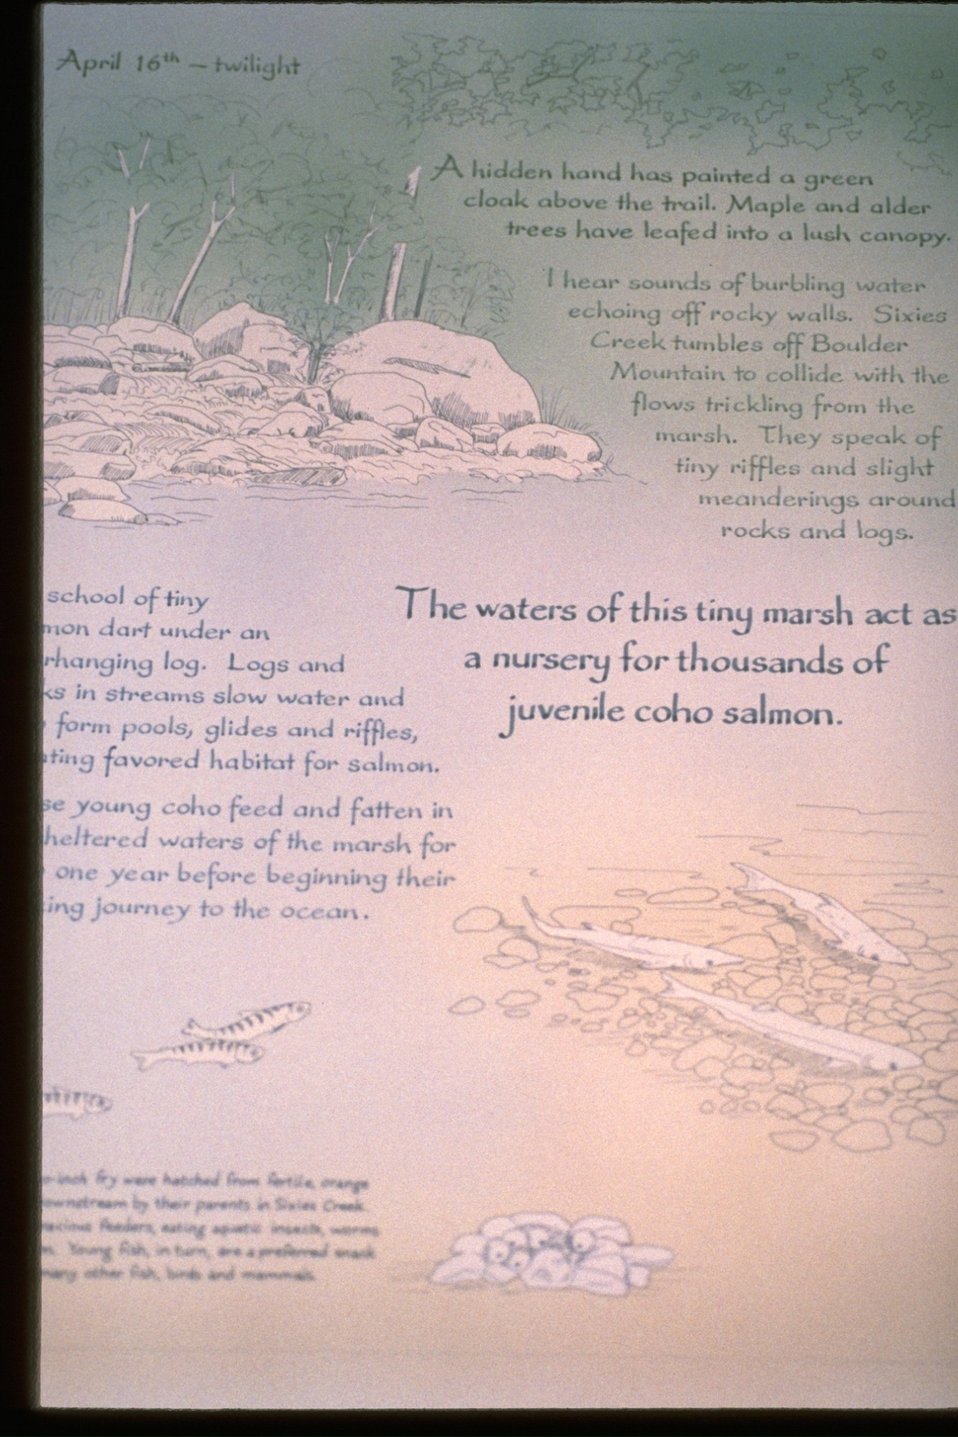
Interpretive Panels: Boardwalk Trail Journals.